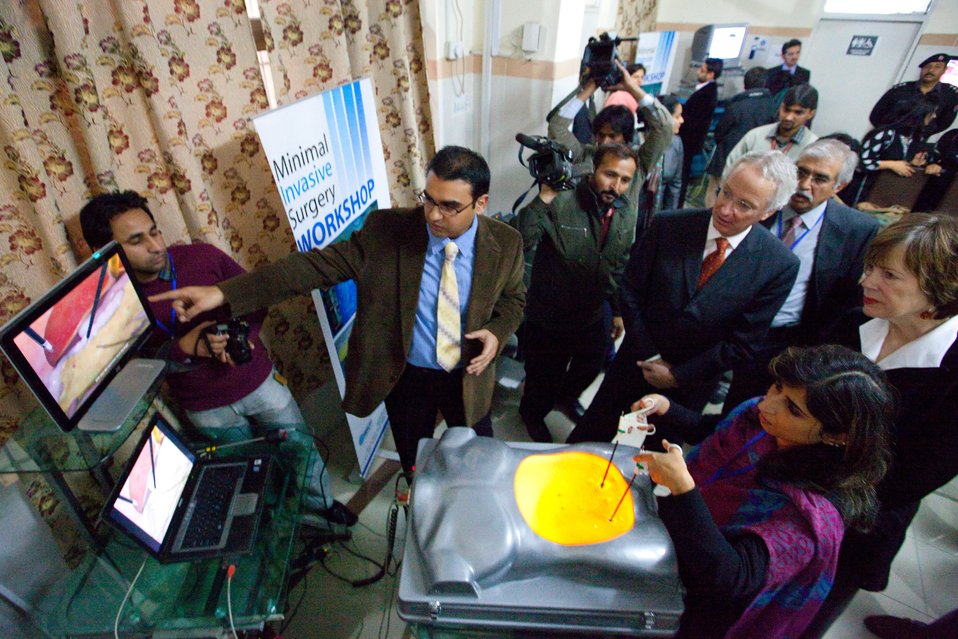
Ambassador Munter and his wife Dr Marilyn Wyatt taking brief from officials at Holy Family Hospital in Rawalpindi.

Telemedicine/training center during visit from Ambassador Munter and his wife Dr Marilyn Wyatt at Holy Family Hospital in Rawalpindi

For more information on the U.S. assistance Visit
USAID:
www.usaid.gov

Check our videos and photos on YouTube and Flickr:
www.youtube.com/user/USAIDPakistan
www.flickr.com/photos/usaid pakistan